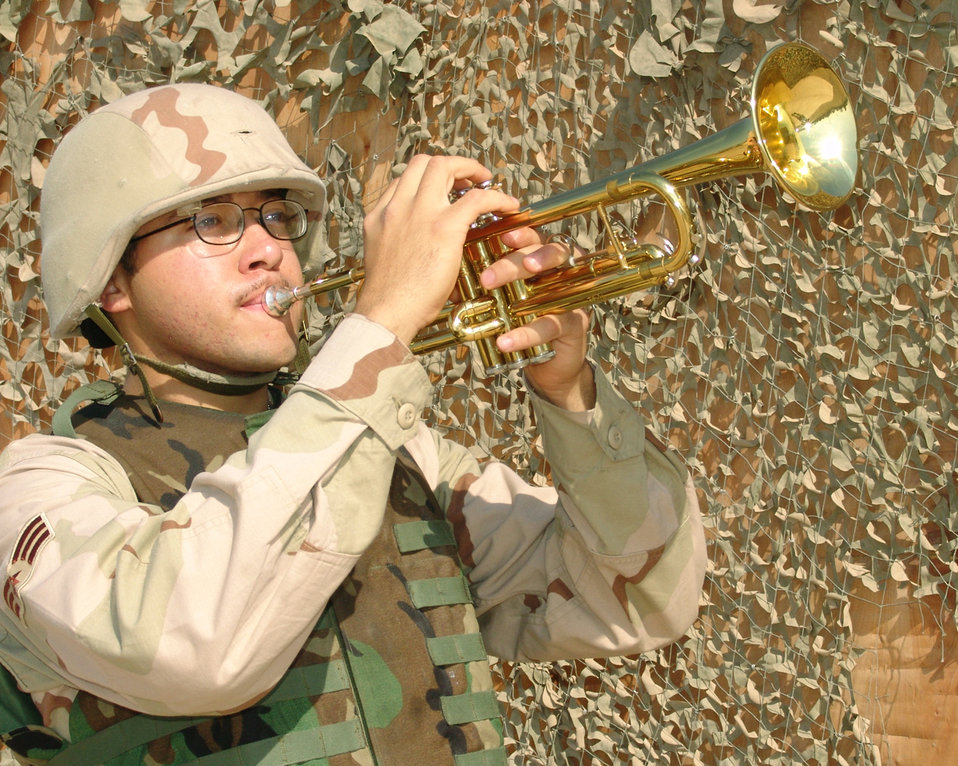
A day to remember

BAGHDAD, Iraq -- Senior Airman David Mendez plays